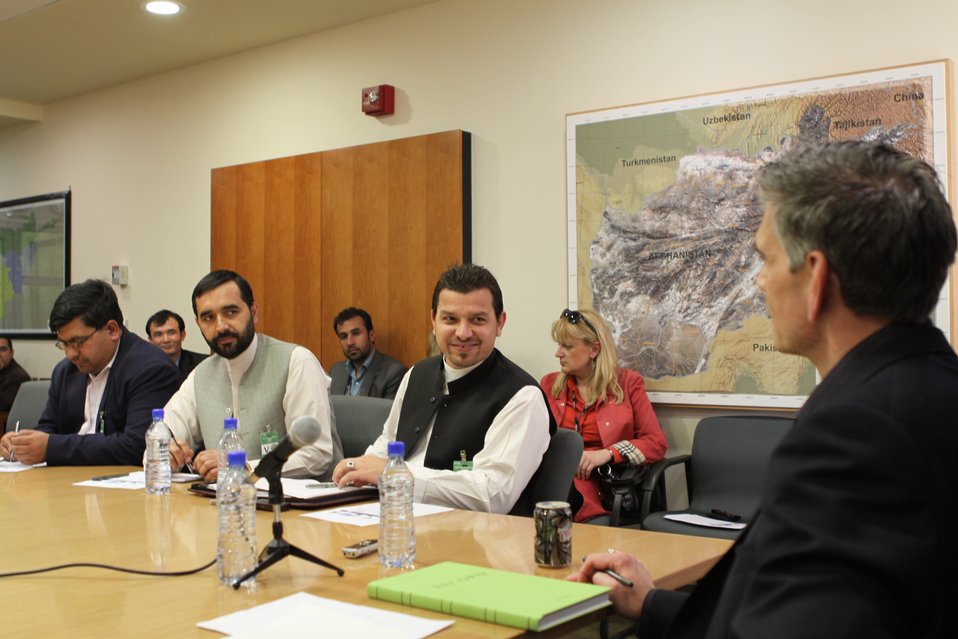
USAID Mission Director Earl Gast Conducts a Media Roundtable with Afghan Media, March 17, 2011